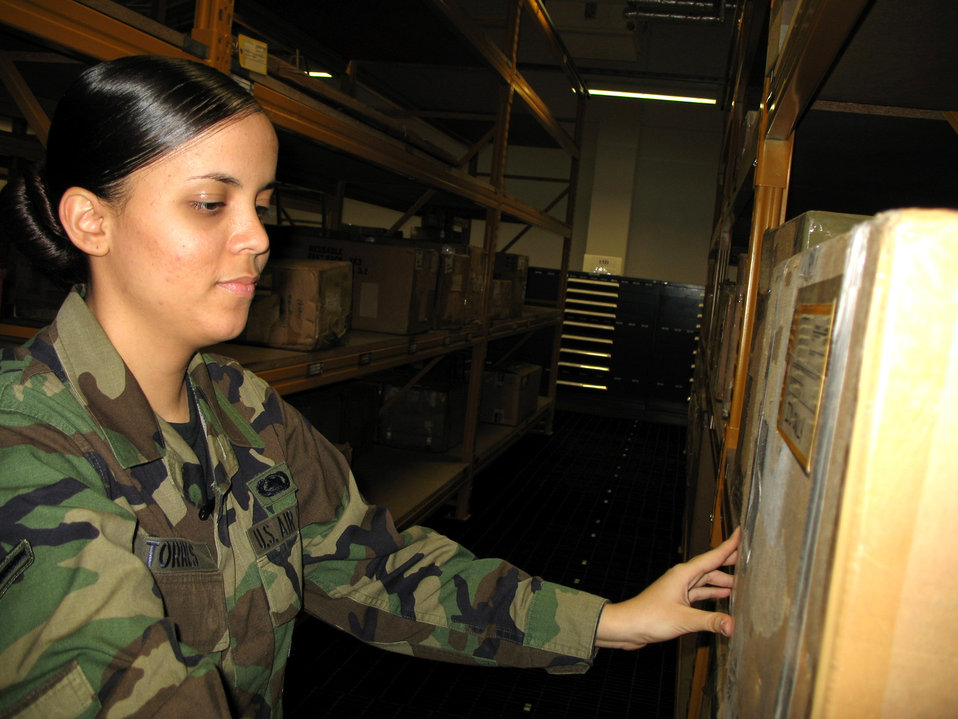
Serving through the season: Amn. Marilyn Torres

Airman Marilyn Torres stocks shelves filled with aircraft parts and supplies at Spangdahlem Air Base, Germany, Dec. 8. Shelving items is one of the final steps after processing of forms and input into a computer database. Her efforts ensure heavy aircraft assigned to the 726th Air Mobility Squadron are mission-ready.